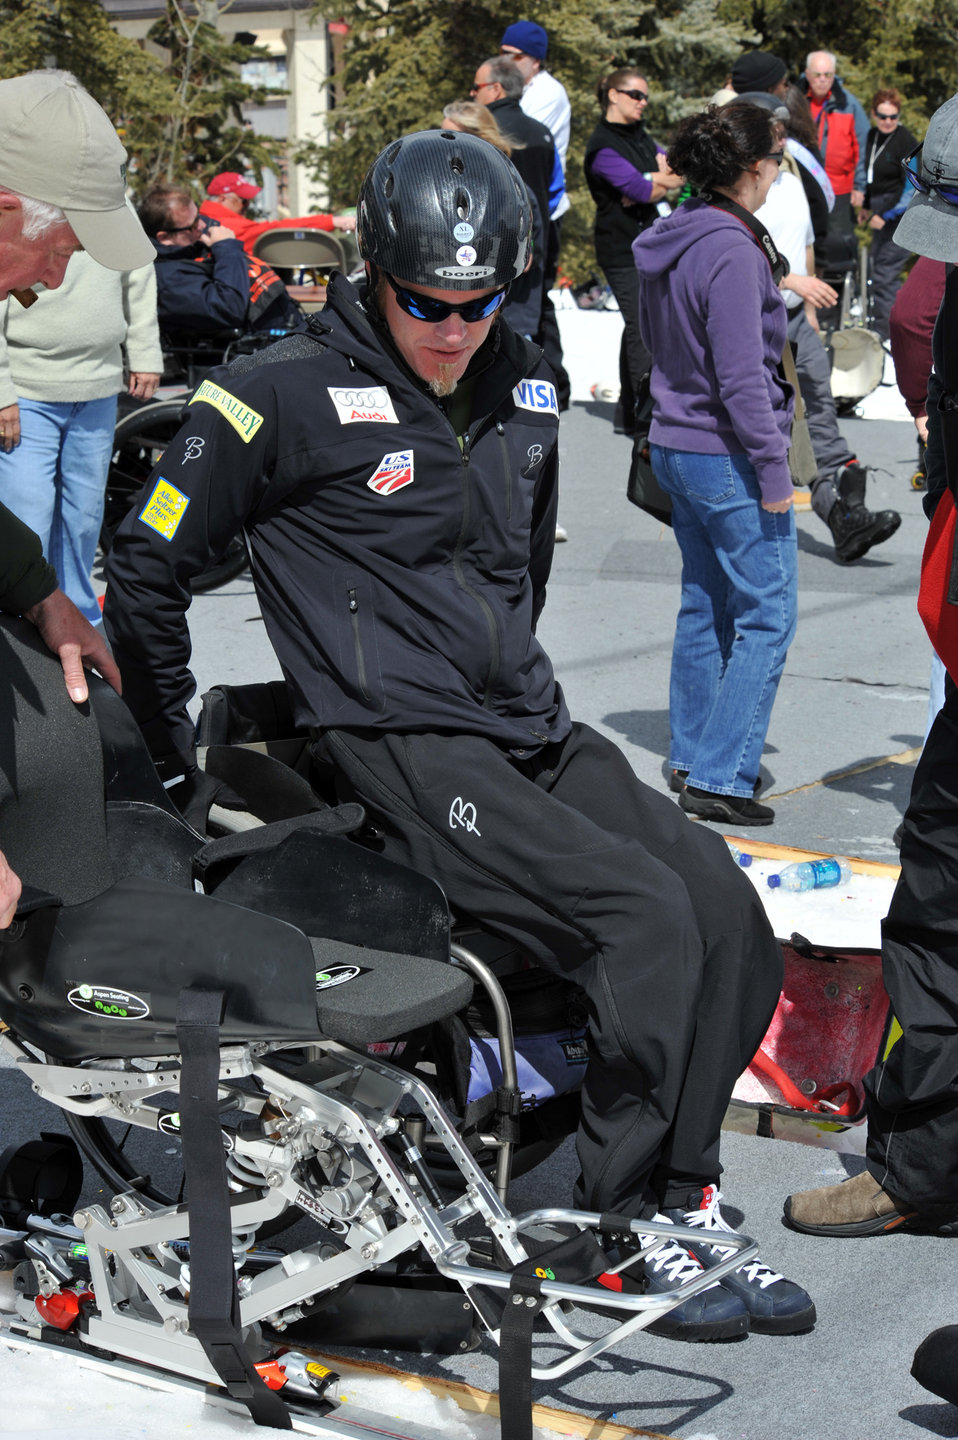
An Air Force veteran’s story: From combat controller to Paralympian

Sean Halsted lifts himself out of his wheelchair into a mono-ski outside The Silvertree Hotel for the 24th National Disabled American Veterans Winter Sports Clinic March 30, 2010, in Snowmass Village, Colo. Mr. Halsted is an Air Force veteran and resides in Rathdrum, Idaho. The event is sponsored by the Department of Veterans Affairs and Disabled American Veterans.